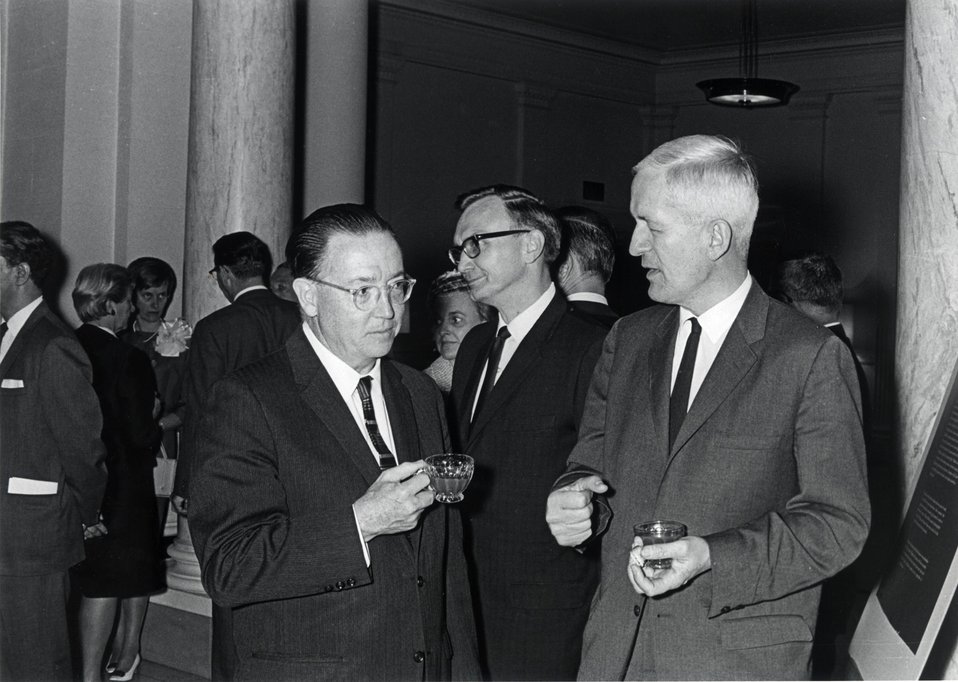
Ramsey, Erlewine, Ramsey. First Lawrence Award Ceremony, in Washington, on June 27, 1960.